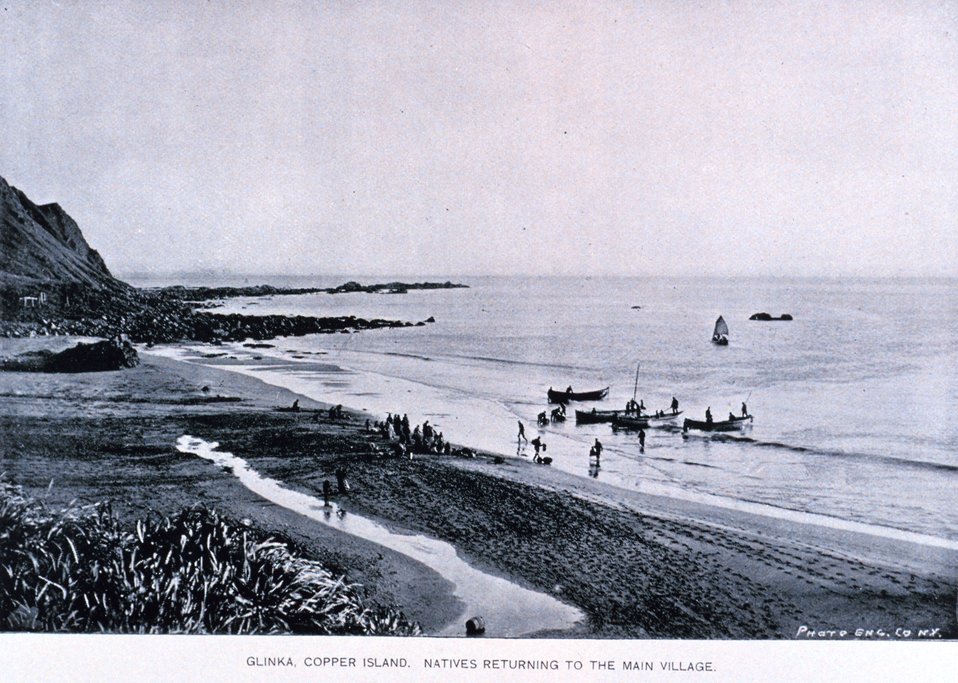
Native Aleuts returning to Glinka, the main village of Copper Island